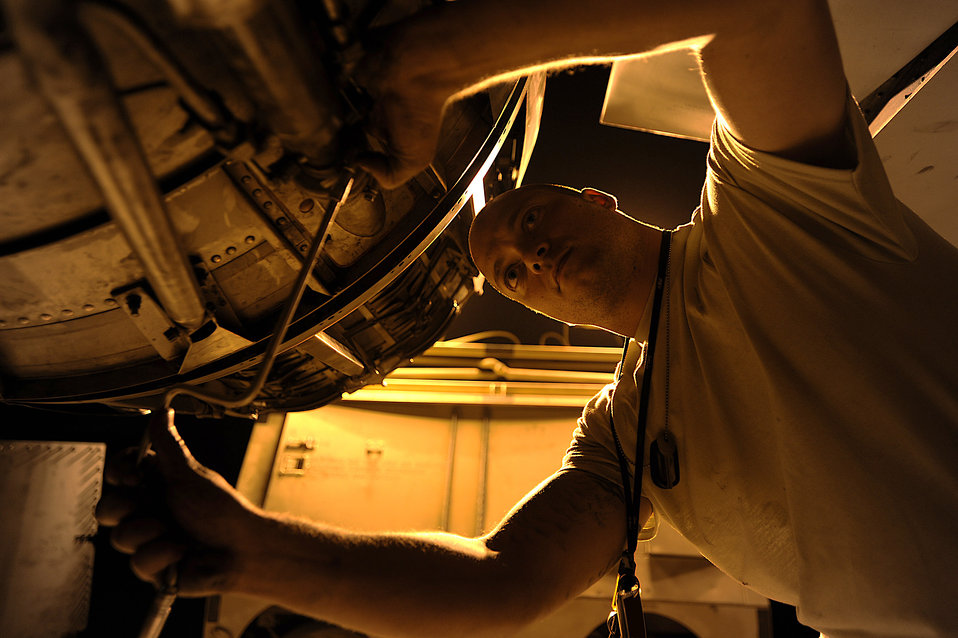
Burning midnight oil

Staff Sgt. Nathan Gadbois tightens clamps around an actuator on an F-16 Fighting Falcon Oct. 6 during some late-night maintenance at Joint Base Balad, Iraq. The actuators control the movement of the aircraft's exhaust nozzle. Sergeant Gadbois, an aerospace propulsion journeyman with the 332nd Expeditionary Aircraft Maintenance Squadron, is deployed from Misawa Air Base, Japan. His hometown is Bryan, Texas.